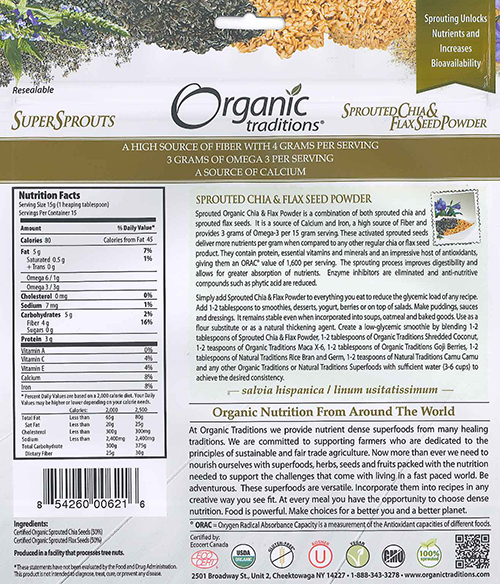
RECALLED – Chia and Flax seed powder

June 4, 2014 – Product Recall – Health Matters America, Inc, Recalls Organic Sprouted Chia Seed Powder and Sprouted Chia/flax Seed Powder Due to Possible Health Risk.